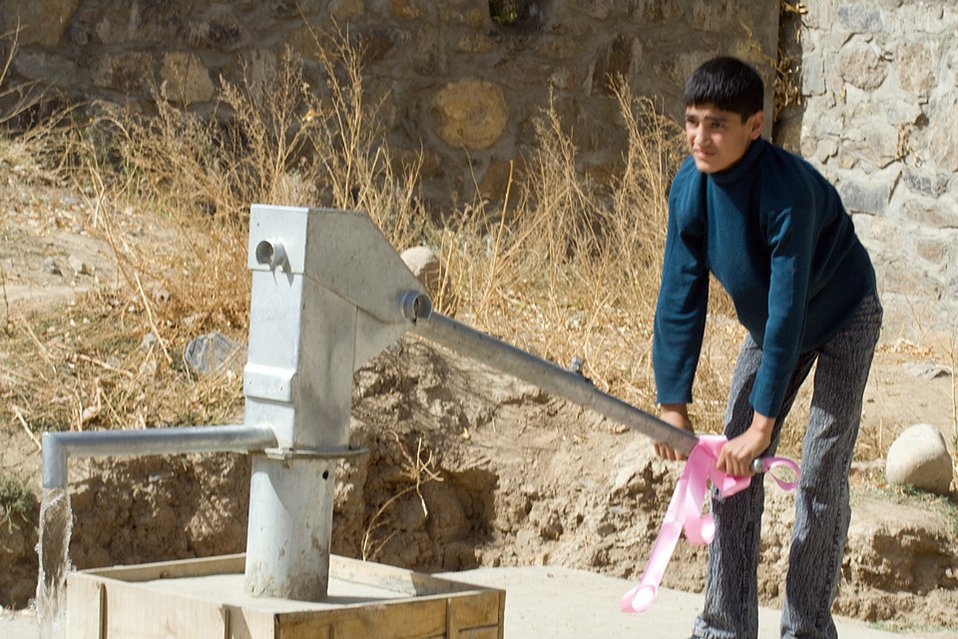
Reconstruction team dedicates water well

An Afghan student at the Rohka School demonstrates the new water well pump built by the Panjshir Provincial Reconstruction Team and dedicated Oct. 21. The well was funded by the PRT's Commander's Emergency Response Program.